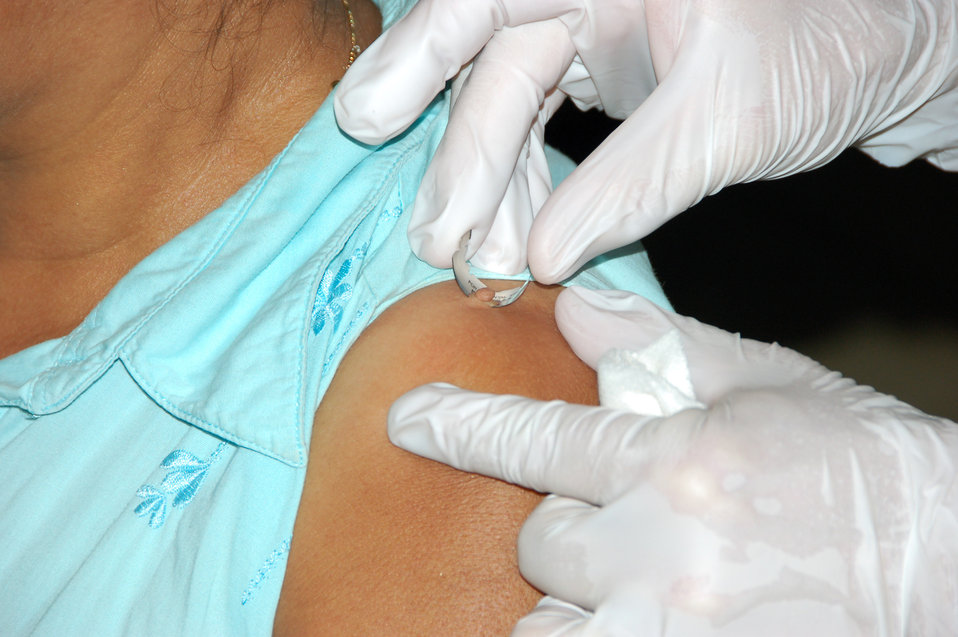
Managed Confusion

Lt. Col. Steven E. Ritter removes a skin tag from a patient with a razor blade at a school in Cabuya, Panama during Medical Readiness Training Exercise-Panama July 15. Colonel Ritter is a dermatologist from the 81st Medical Operations Squadron at Keesler Air Force Base, Miss.